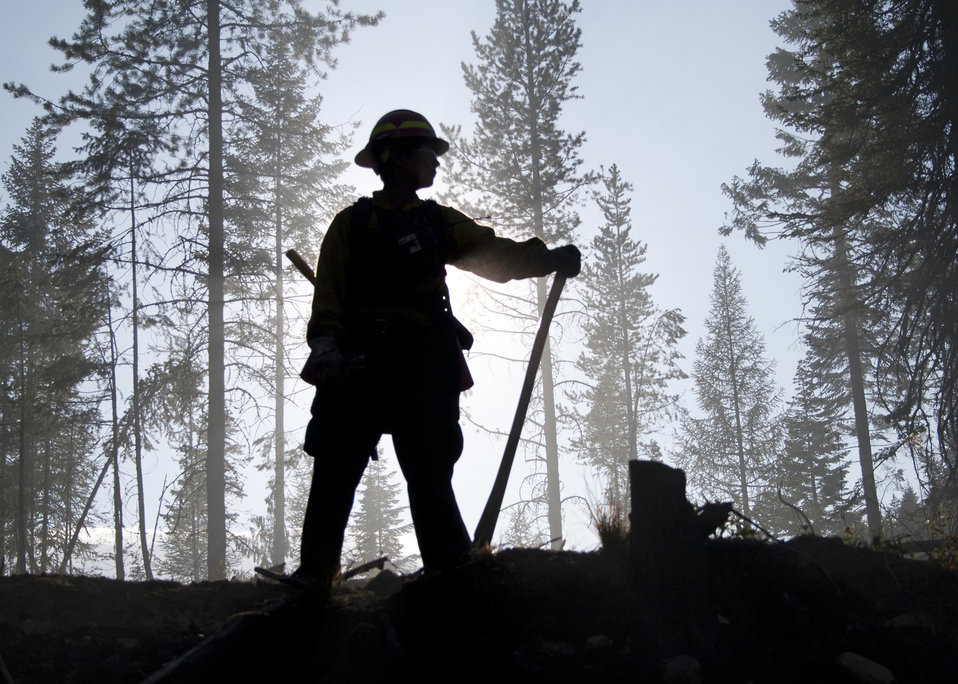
Firefighters supported by three fire engines, two helicopters, two water tenders, a dozer and an air tanker battled to contain the 90 acre Rogers Fire located on Mt. Rogers five miles west of Aladdin, WA on the Colville National Forest. Firefighters worked under adverse conditions with steep terrain and gusting winds to reduce the loss of timber and protect the Rogers Mountain Trail. The Rogers Fire began on Aug. 9, 2011 and was controlled by Aug. 19, 2011 with mop up crews ensuring that no flare-ups occurred. Colville National Forest has 1.1 million acres in northeastern Washington and includes the Kettle River, Selkirk Mountain ranges, and the upper reaches of the Columbia River.